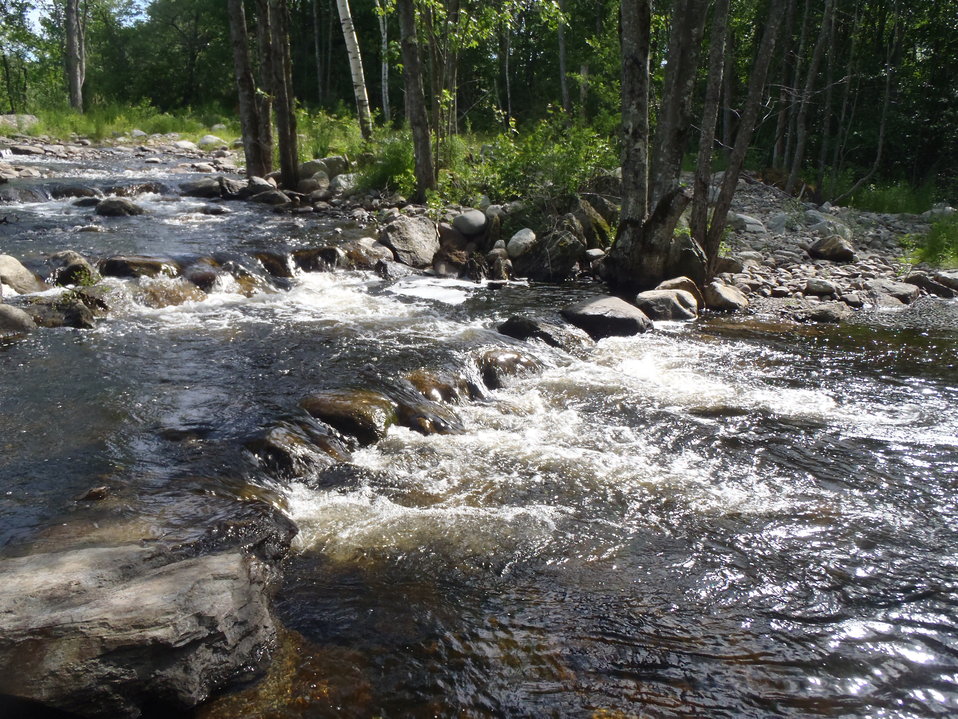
Nature-Like fishway for herring 1